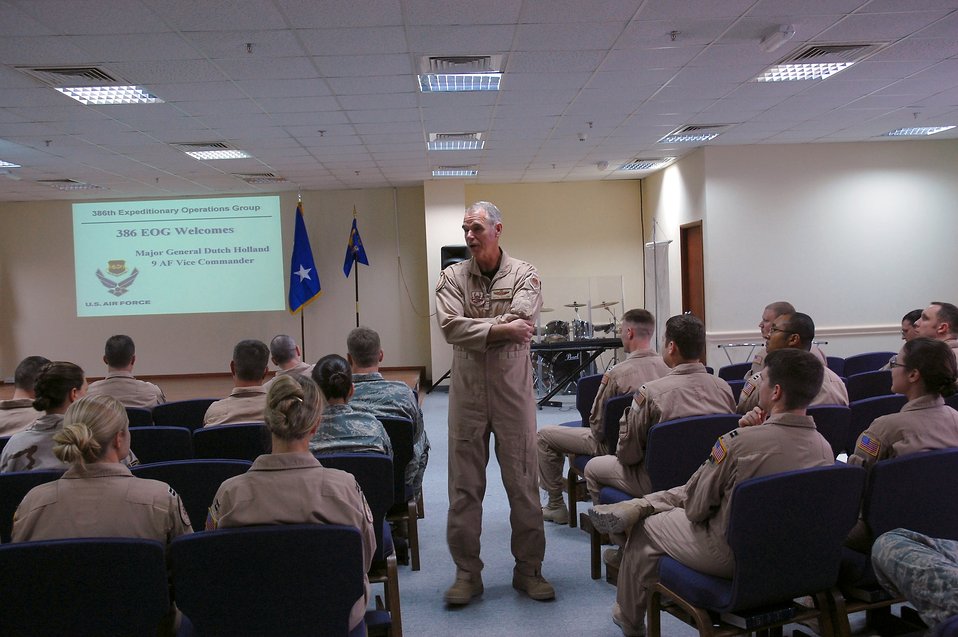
AFCENT deputy commander visits deployed Airmen

Maj. Gen. William L. Holland speaks with members from the 386th Expeditionary Operations Group April 2 at a Southwest Asian air base. General Holland is the 9th Air Force vice commander and the deputy commander of U.S. Air Forces Central from Shaw Air Force Base, S.C. He visited the area of responsibility to thank the Airmen for what they do and to take back any inputs on how to better train and equip the Airmen supporting operations Iraqi Freedom and Enduring Freedom.